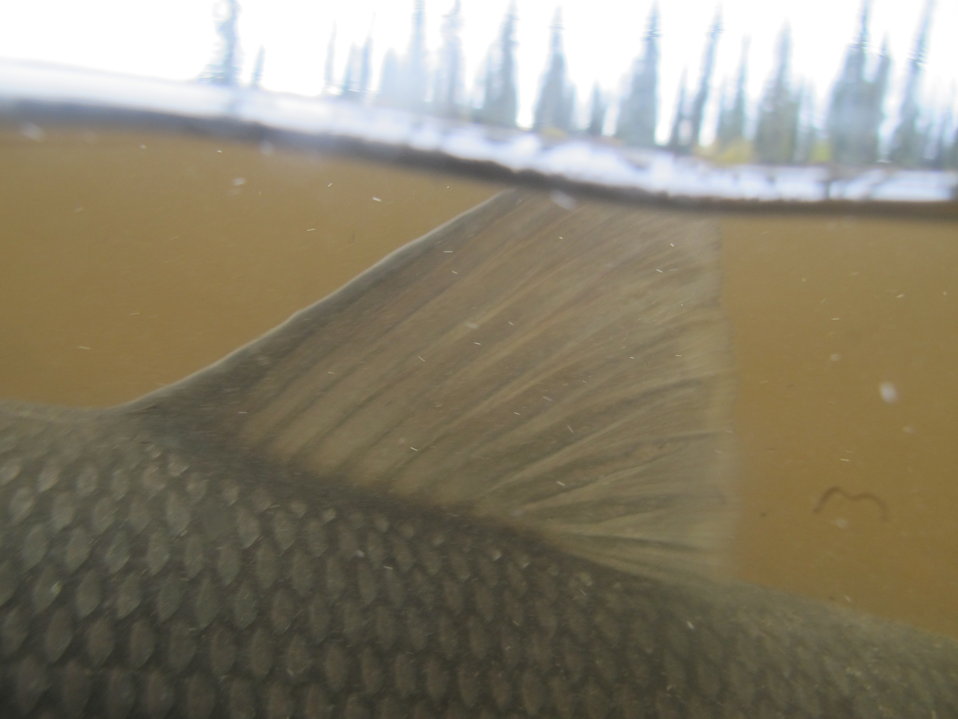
Selawik River sheefish

Close up of dorsal fin and back of male Selawik River sheefish (inconnu). USFWS / Katrina Mueller